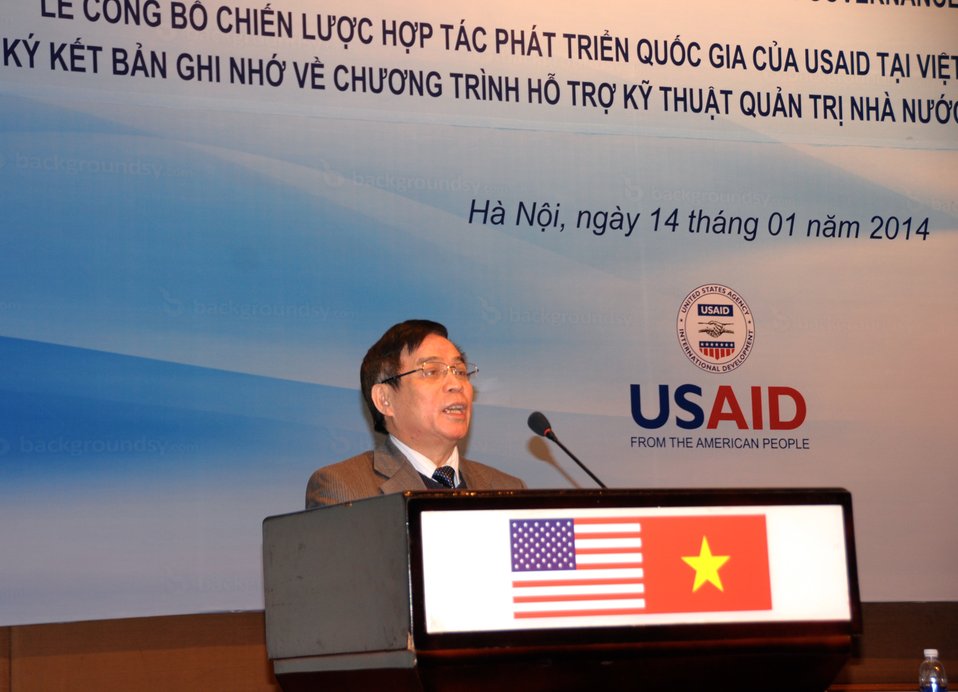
Ministry of Justice Vice Minister Hoang The Lien speaks at the signing ceremony.